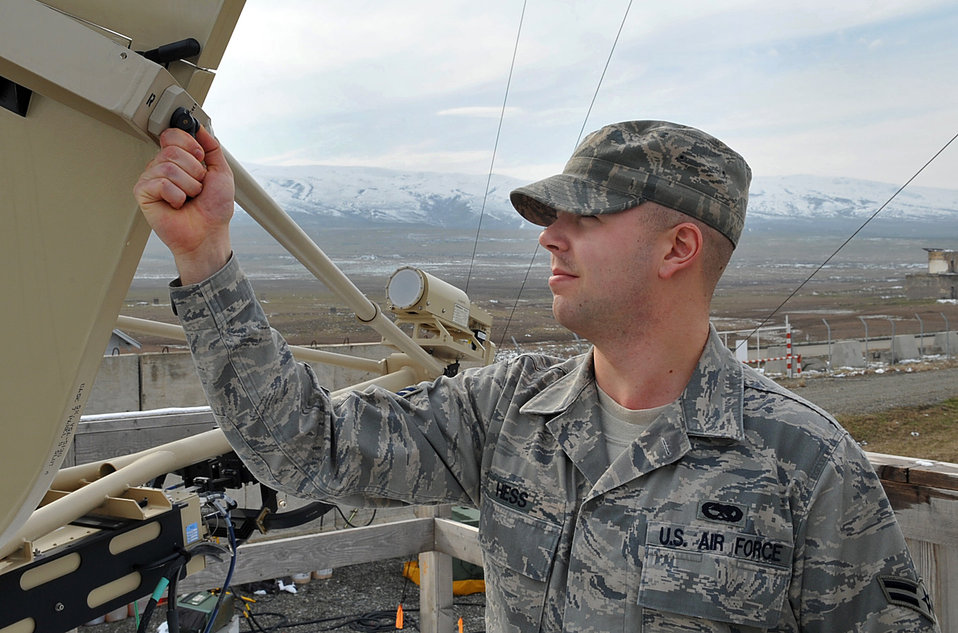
Combat Comm provides vital 'link' to Marines in Georgia

Airman 1st Class Evan Hess performs an operations check on a ground multi-band terminal used for long range communications Feb.9, 2010, at Krtsanisi National Training Center, Republic of Georgia. Airman Hess is a transmission system technician assigned to the 1st Combat Communications Squadron.